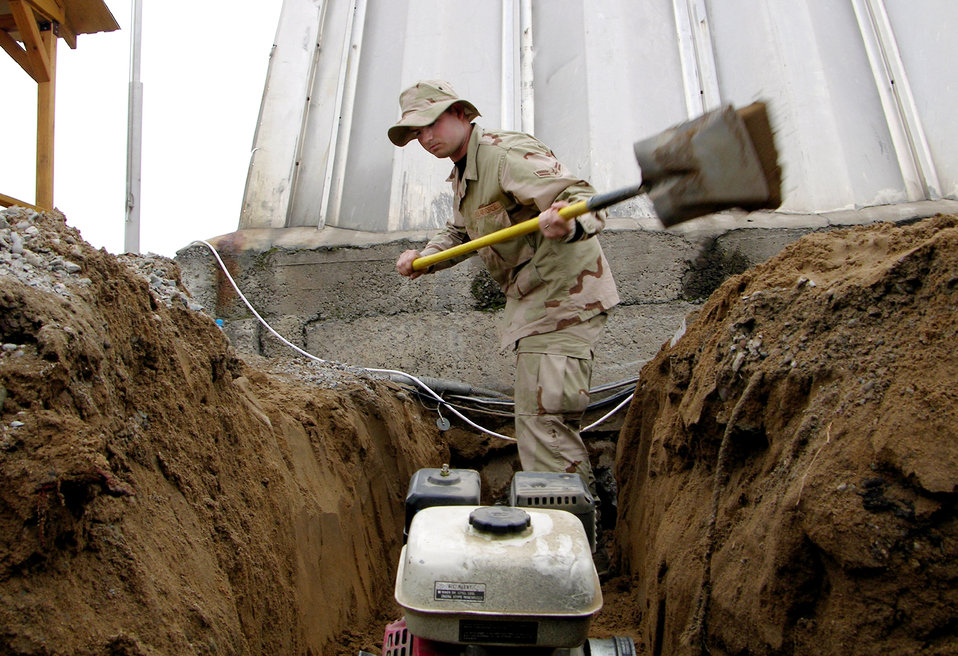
In the trenches

MANAS AIR BASE, Kyrgyzstan (AFPN) -- Airman 1st Class Scott Helton puts the finishing touches on a sewage pipe trench during the renovation of the 367th Air Expeditionary Wing headquarters here.